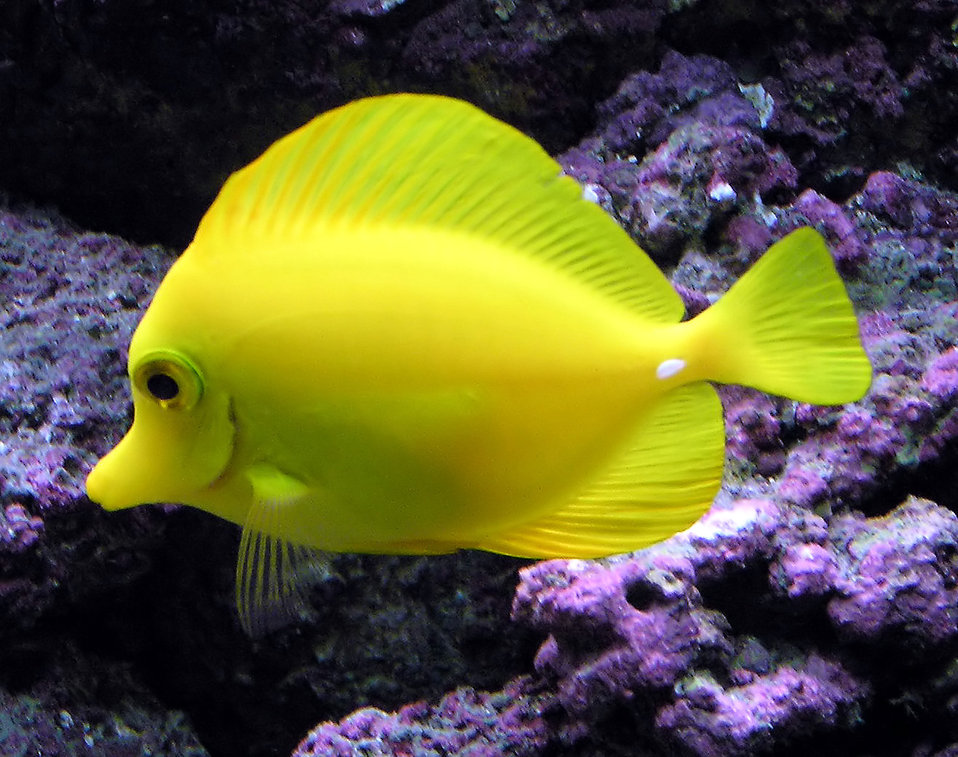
Yellow Tang Zebrasoma flavescens at Bristol Zoo, Bristol, England. This is the character Bubbles in the film “Finding Nemo”. (The purple colour in the background is genuine, I don't know what it's due to).